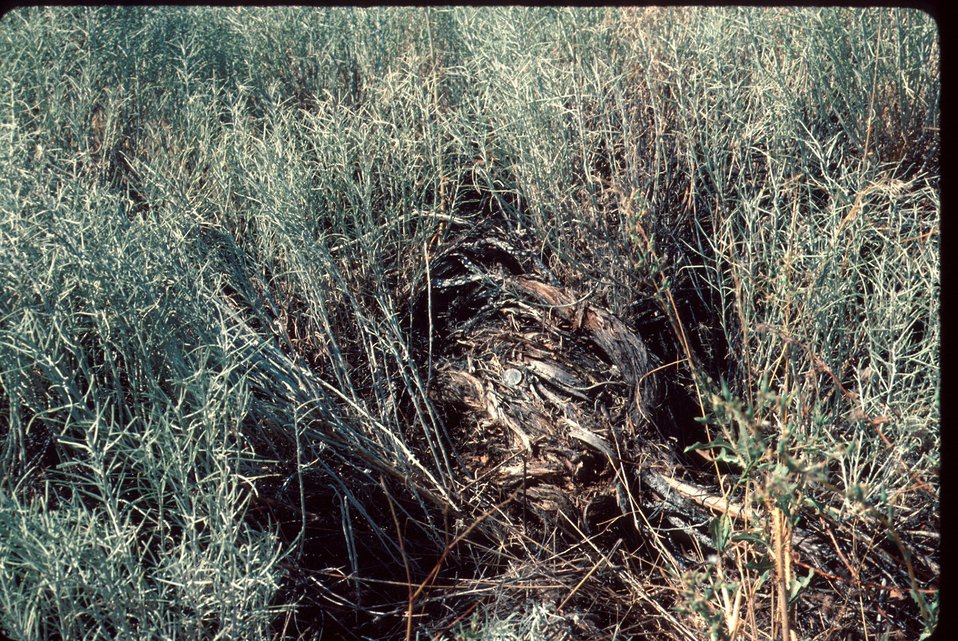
Thick trunk of Chrysothamnus neausosus ssp. hololeuicus Rabbit brush Brush, Wildflower